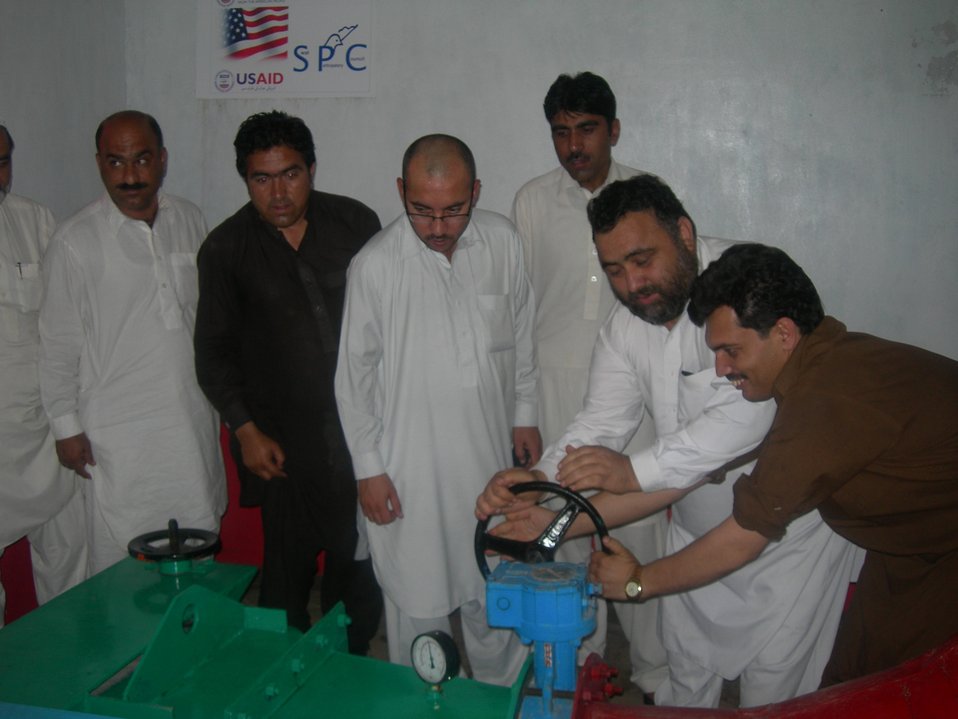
Workers Team and Guests at Ceremony

A new wave of energy has swept a remote village of Matta Tehsil. Children are excited, elders relieved. Electricity had lit their dark houses after over six decades of independence and connected them to the modern world.
“We can now watch cartoons on the TV just like all the other children,” said an excited child during the inauguration of a micro-hydropower station on Saturday.
The community-based power station, which will supply electricity to about 110 households in Swatai village, has been installed with the assistance of Small Grants Ambassador Fund Program of the USAID in collaboration with the Swat Participatory Council (SPC).